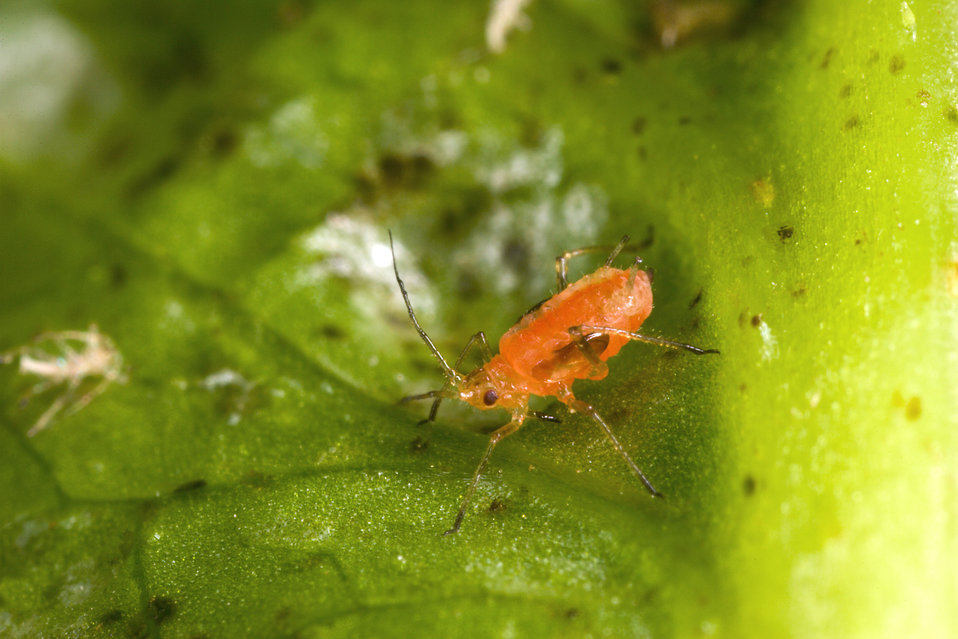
A close-up image of a lettuce aphid on lettuce on Nov. 6, 2006. This pest (about 1-3 millimeters long) appeared in California’s Salinas Valley in 1998 and is now found in all lettuce-production areas of that state and Arizona.